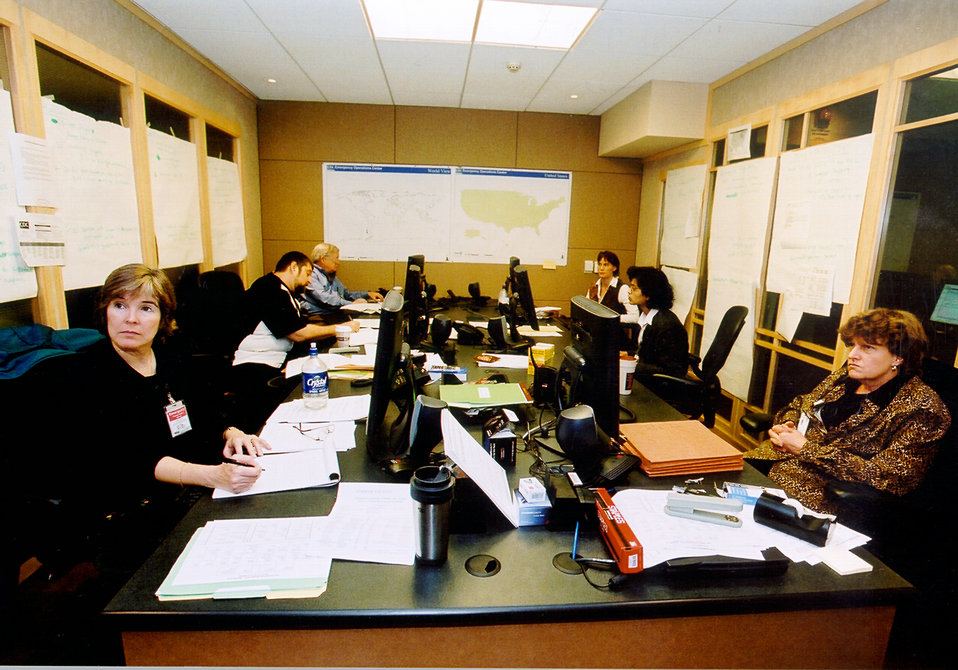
Here we see team members working in the CDC's new Emergency Operations Center (EOC).